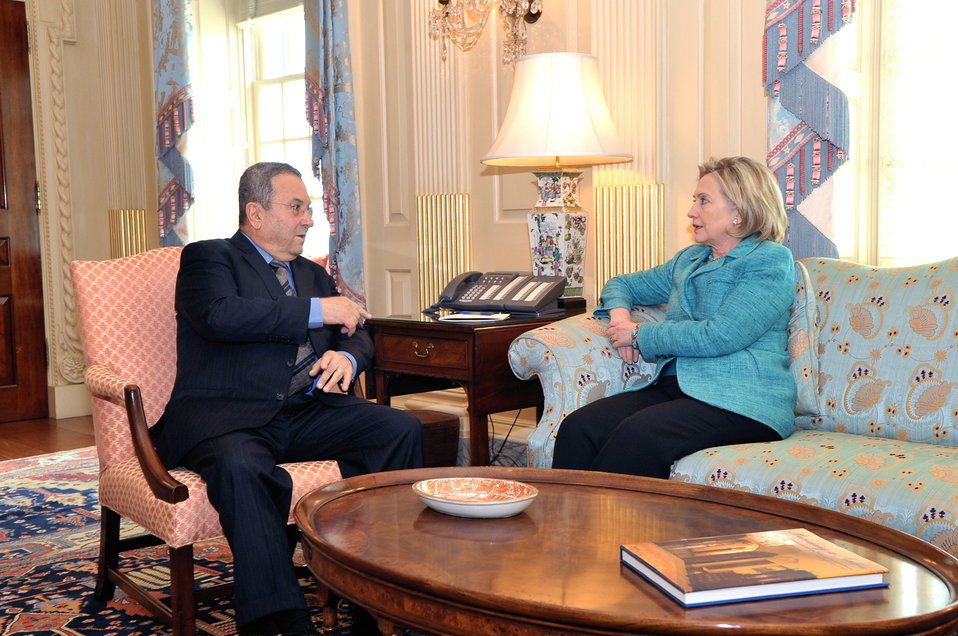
Secretary Clinton Holds a Bilateral With Israeli Defense Minister Barak

U.S. Secretary of State Hillary Rodham Clinton holds a bilateral meeting with Israeli Defense Minister Ehud Barak at the U.S. Department of State in Washington, D.C., on July 26, 2010.